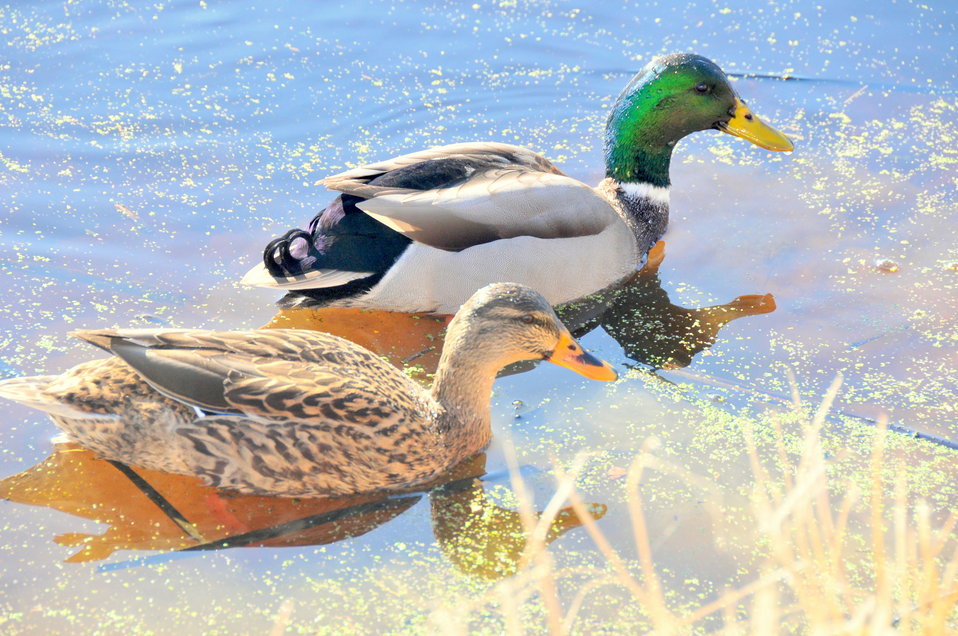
Mallard pair on Sand Lake WMD